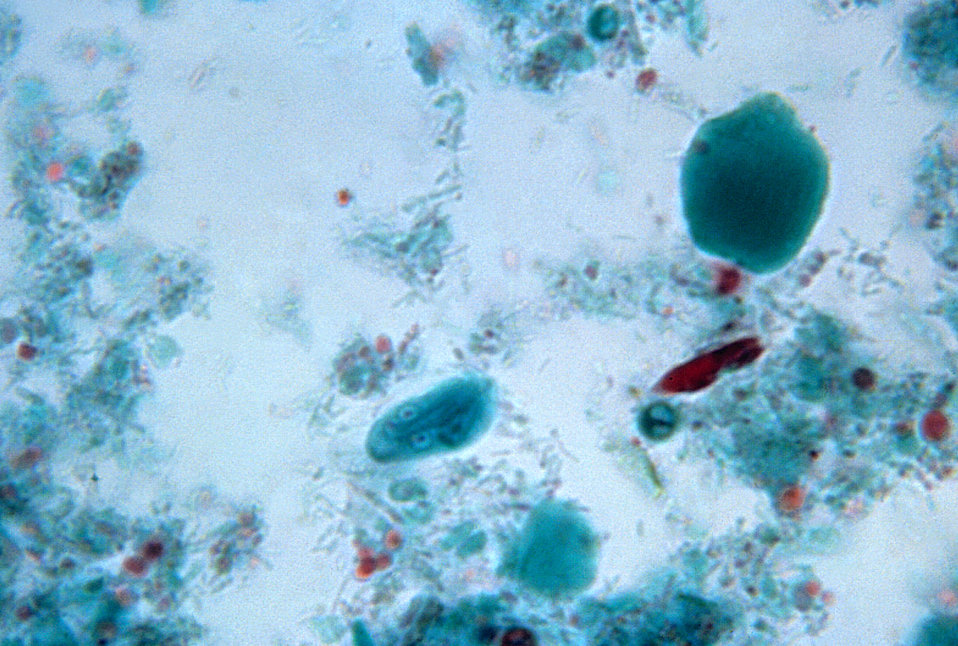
Photomicrograph of a Giardia lamblia cyst seen using a Trichrome stain.